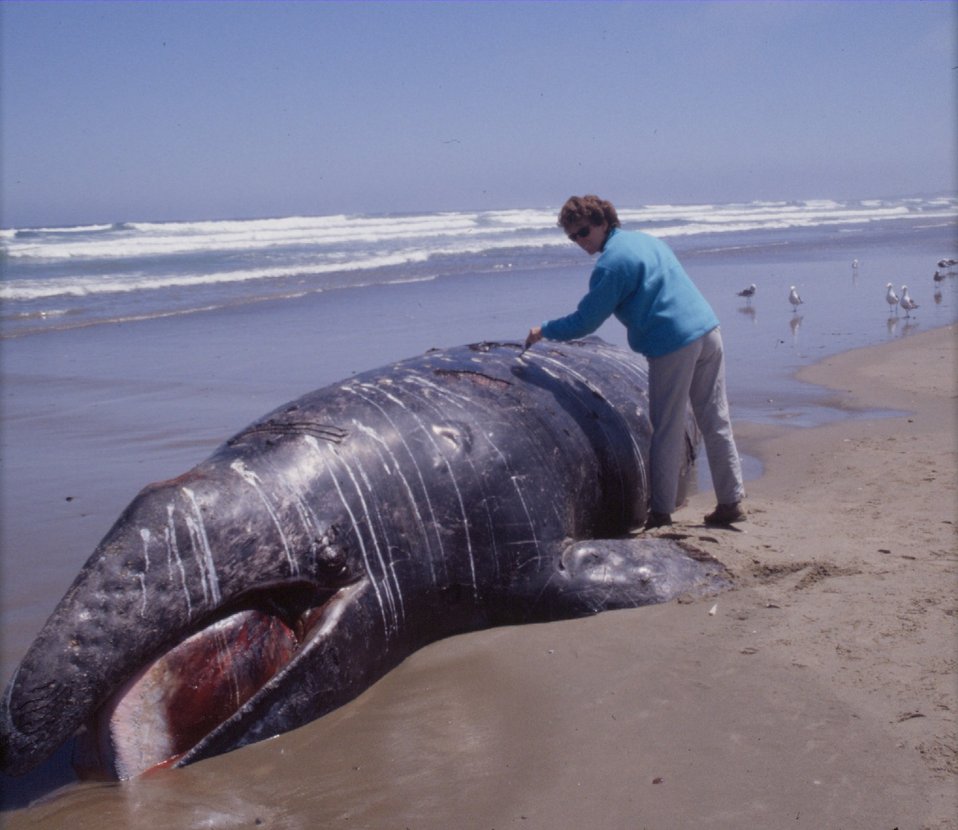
Researcher Susan Chivers taking a tissue sample from a young gray whale stranded on the central California coast. Tissue sample analysis provides valuable data about the life history of gray whales.